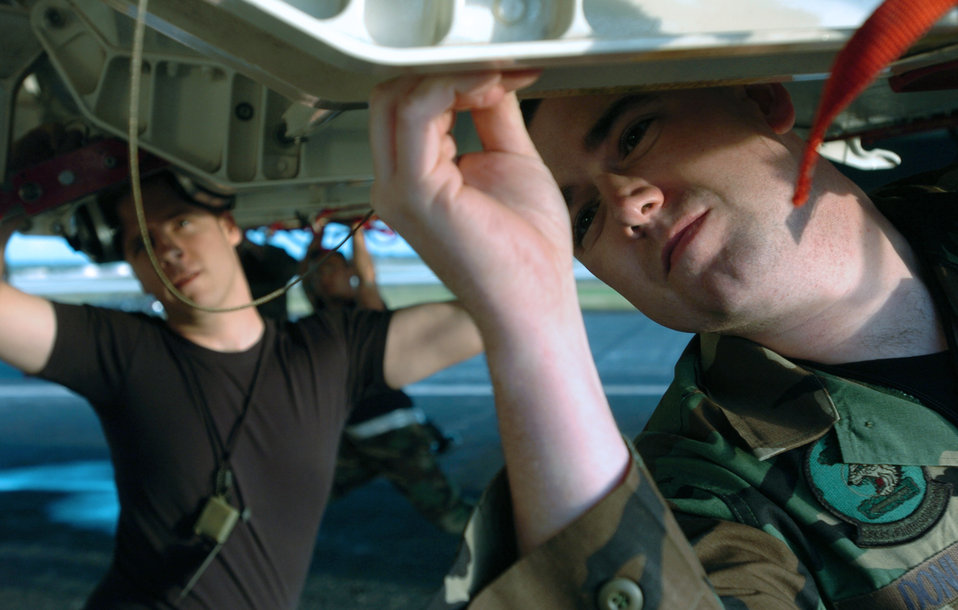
Putting the 'bomb' in bomber

ANDERSEN AIR FORCE BASE, Guam -- Staff Sgt. Justin Donley (right) secures the bomb bay door of a B-2 Spirit bomber here before loading a bomb. He is a weapons specialist deployed from the 509th Aircraft Maintenance Squadron at Whiteman Air Force Base, Mo.